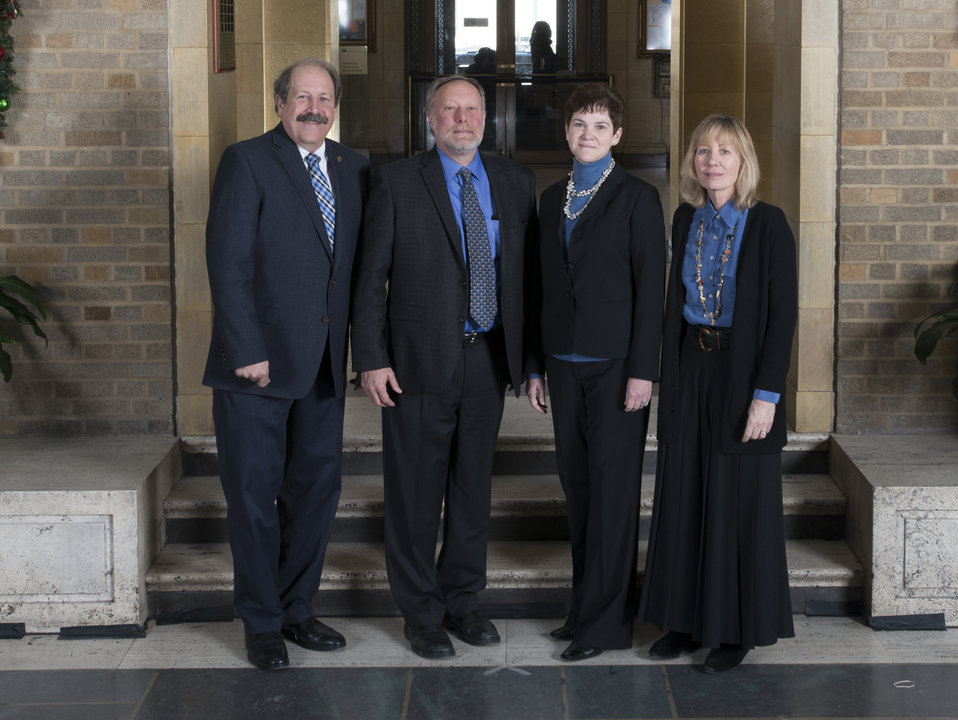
Agriculture Deputy Secretary Krysta Harden stands with the Green Fire Production Team, Forest Service from Vallejo, CA on the patio at the U.S. Department of Agriculture (USDA) in Washington, D.C. on Wednesday, Dec. 11, 2013. The team received the Secretary’s Honor Award for producing the award-winning documentary Green Fire that continues to share the Forest Service land ethic with millions of viewers around the world.